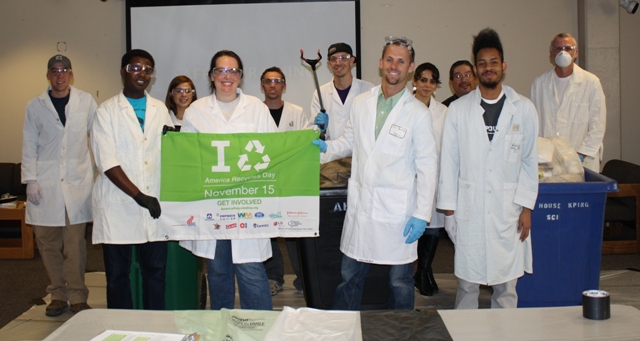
November 15, 2013 - Auraria Campus, Denver, CO

The volunteers had fun getting their hands dirty and finding out how the campus can improve its waste management practices.